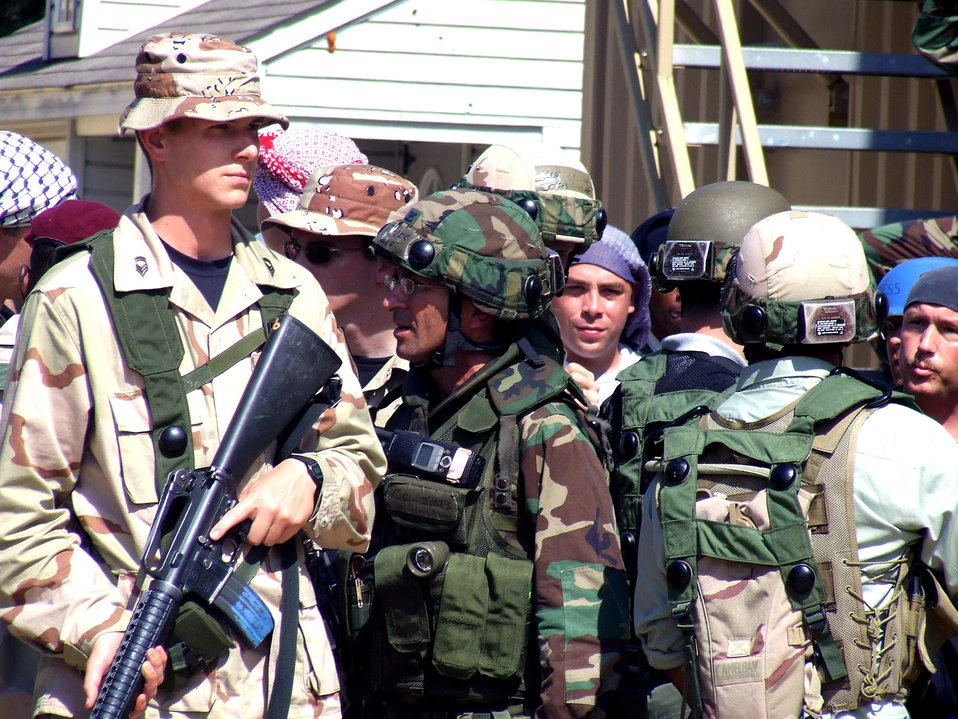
Eagle Flag tests combat support skills

Students and role players hold a scenario in the fictional village of Citheron for Air Force Exercise Eagle Flag 07-6 Aug. 27 at Naval Air Engineering Station Lakehurst, N.J. The exercise is operated by the Air Force Expeditionary Center's 421st Combat Training Squadron from Fort Dix, N.J.